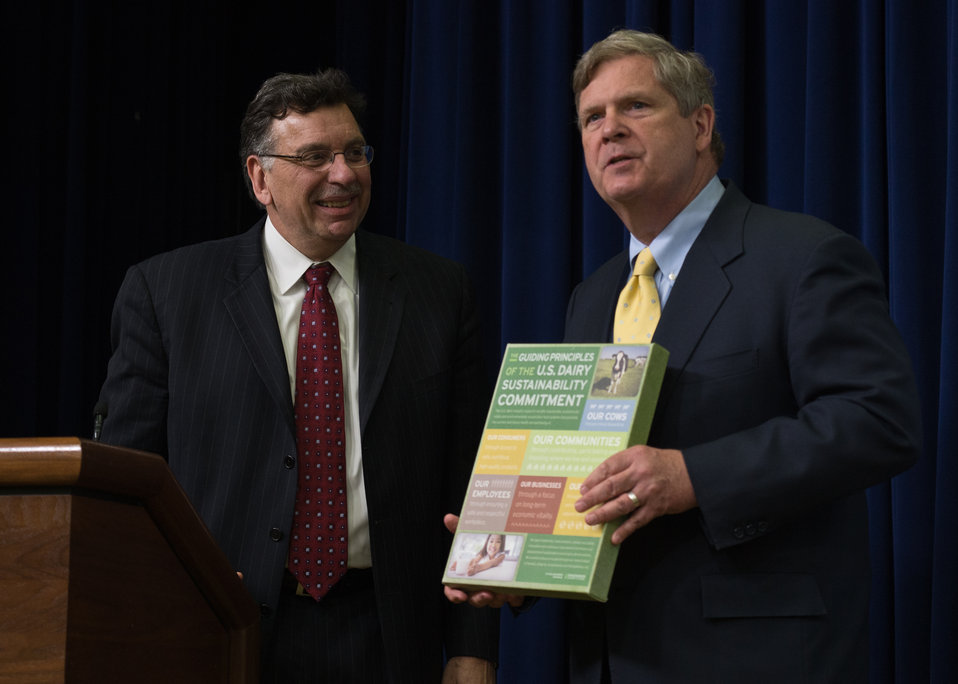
Innovation Center for U.S. Dairy Chief Executive Officer (CEO) Tom Gallagher presents Agriculture Secretary Tom Vilsack with a memento before the signing a Memorandum of Understanding (MOU), at the Innovation Center For U.S. Dairy Sustainability Council Meeting on Wednesday, Apr. 24, 2013, at the White House, Washington, D.C. The objectives of the MOU are to increase the construction of anaerobic digesters and explore innovative ways to use products previously considered waste streams from dairy production, processing and handling.